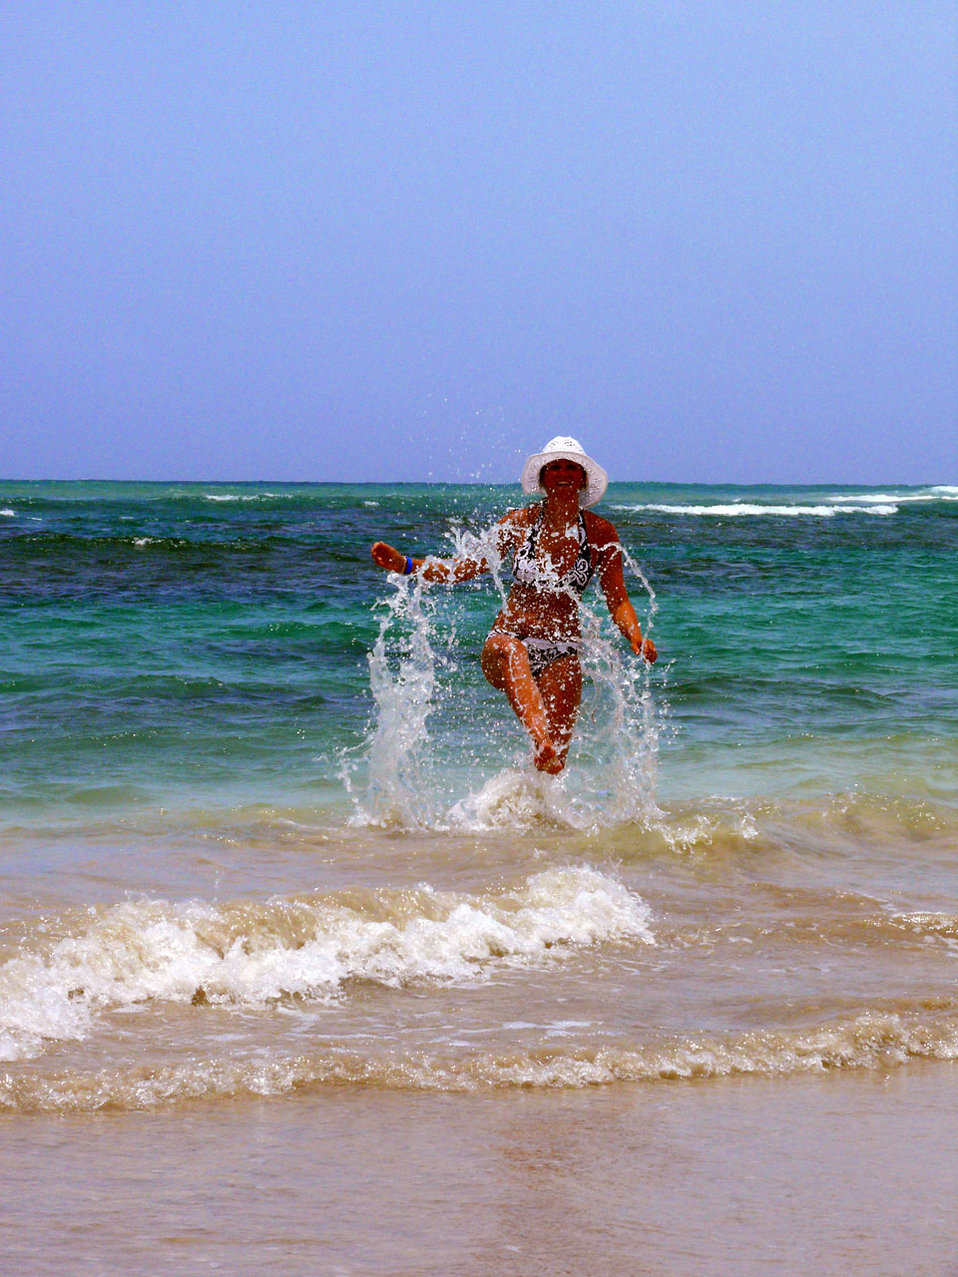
Girl in the sea.